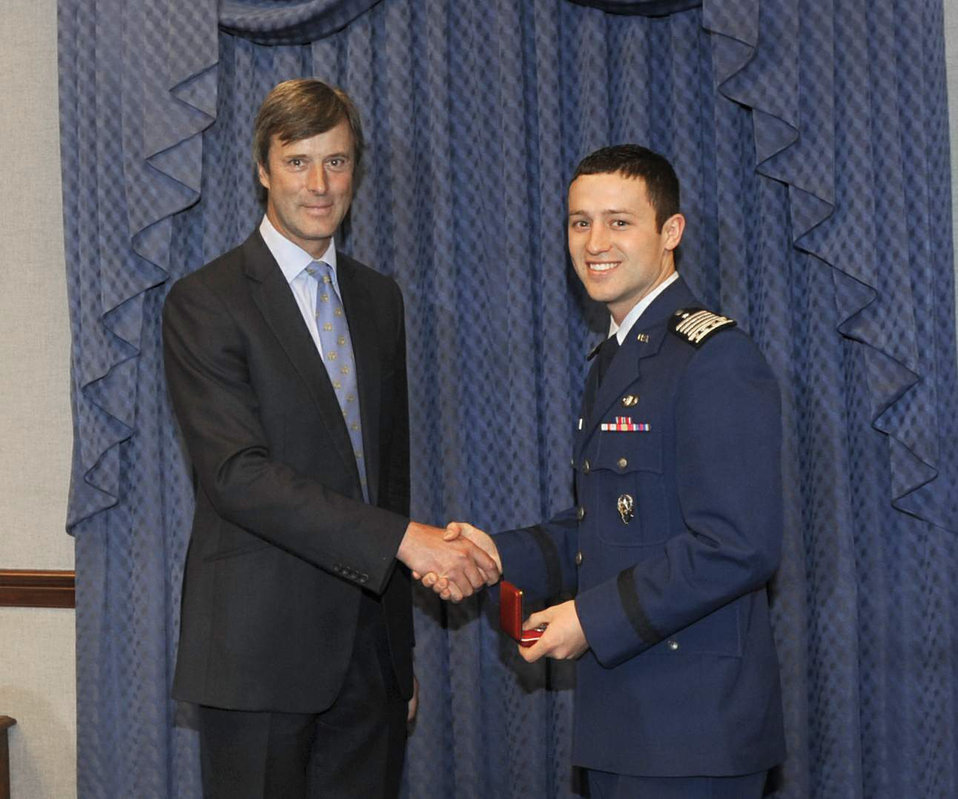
2010 U.S. Air Force Cadet of the Year

Marcus De Ferranti presents a gift to Air Force Academy Cadet Christopher J. McCool during a ceremony May 12, 2011, at the Pentagon. The ceremony was held to honor Cadet McCool, the 2010 U.S. Air Force Cadet of the Year. Mr. Ferranti was representing the Air Squadron, a private British organization that established the award in 2000 to pay tribute to the U.S. military for its support of the United Kingdom over the years.